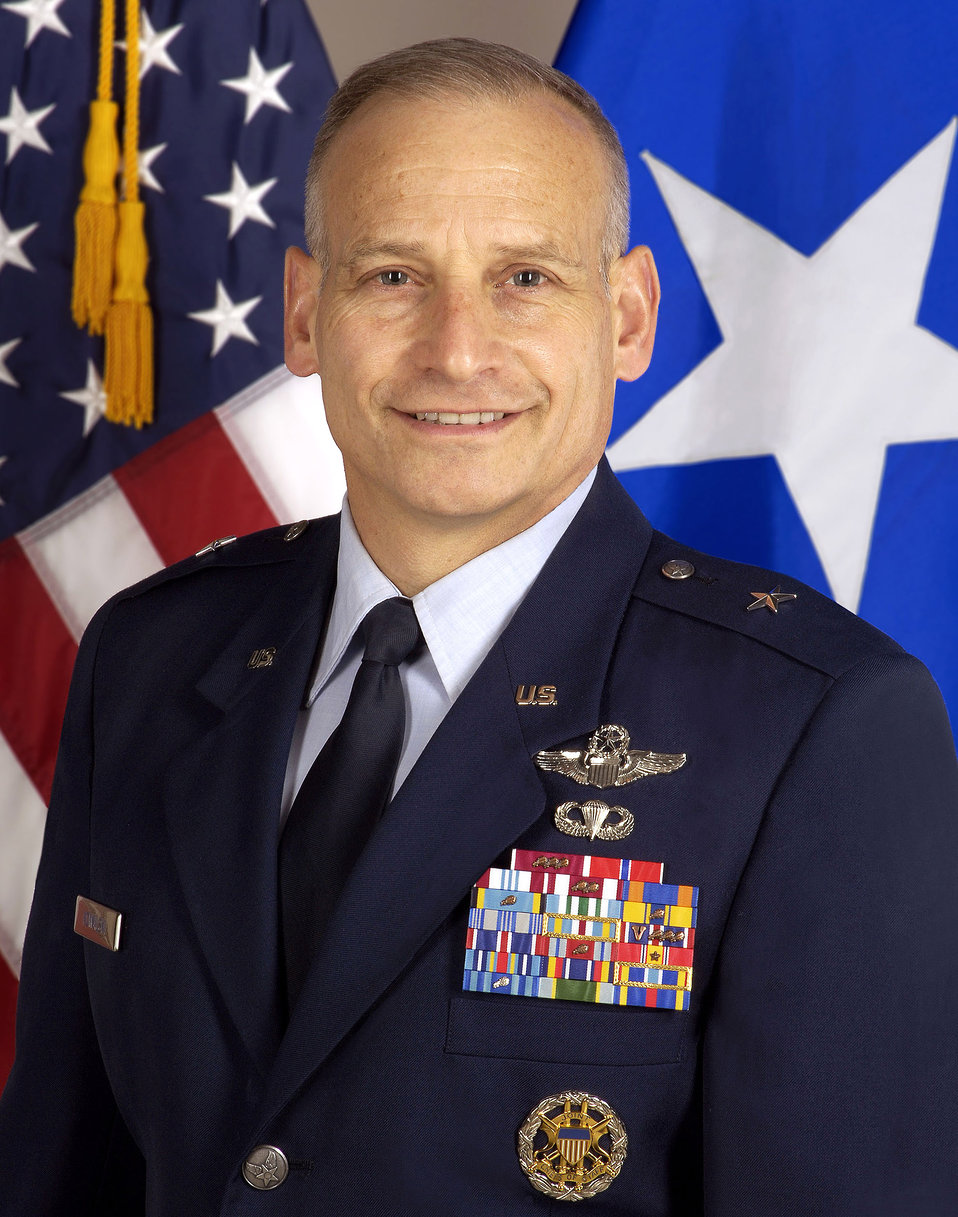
Secretary announces provisional Global Strike commander

Brig. Gen. James M. Kowalski was chosen by Air Force Secretary Michael B. Donley to lead the provisional Air Force Global Strike Command Dec. 18. The provisional command will be temporarily located at Bolling Air Force Base, D.C.